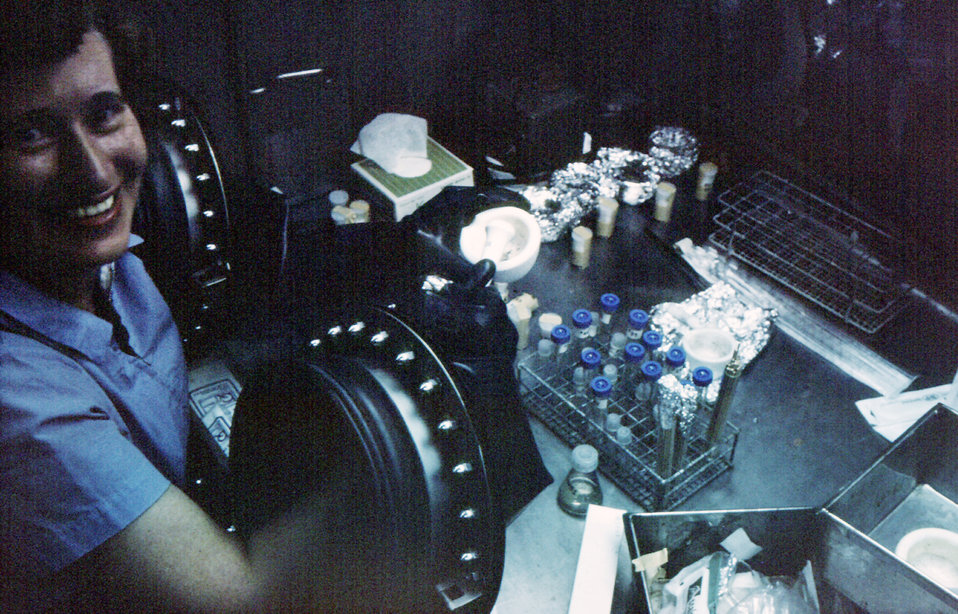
This photograph shows CDC virologist Herta Wulff, Ph.D., working with specimens through the sealed portals of a 'glove box' during a 1975 Marburg vector investigation.